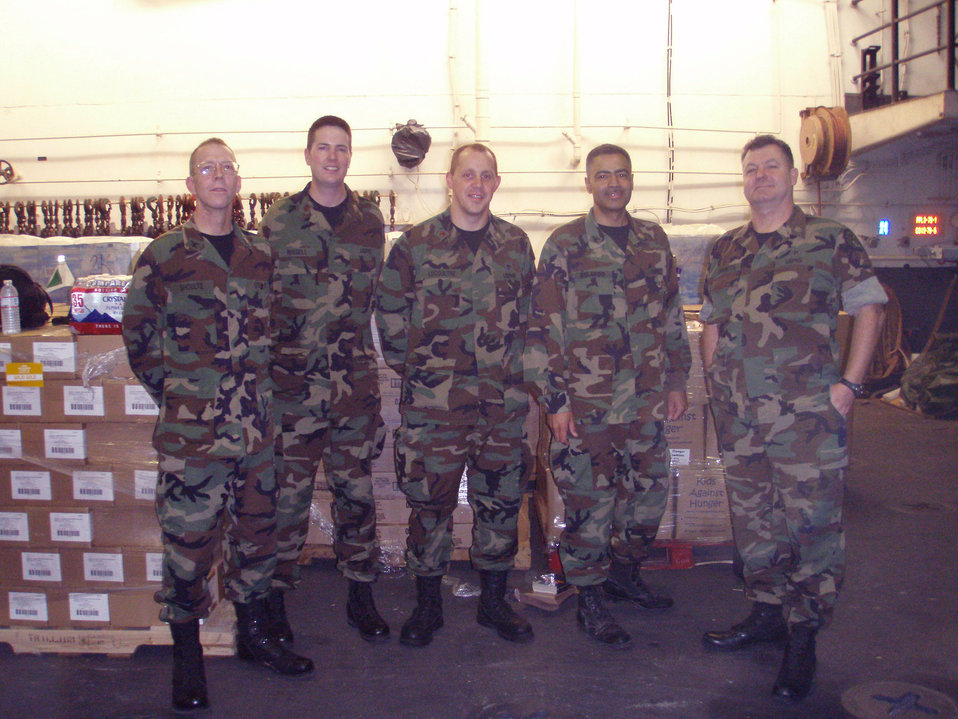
Taken while onboard the USS Bataan, this image depicted a number of United States Public Health Service (USPHS) officers, who were en route to Haiti, in response to that nation's 2010 earthquake, during what was known as Operation Unified Response. Standing from left to right were USPHS officers CAPT, David Schoultz, LCDR, Samuel Russel, LCDR, Trent LeCoultre, CAPT, Jose Belardo, and LCDR Gary Brunette.